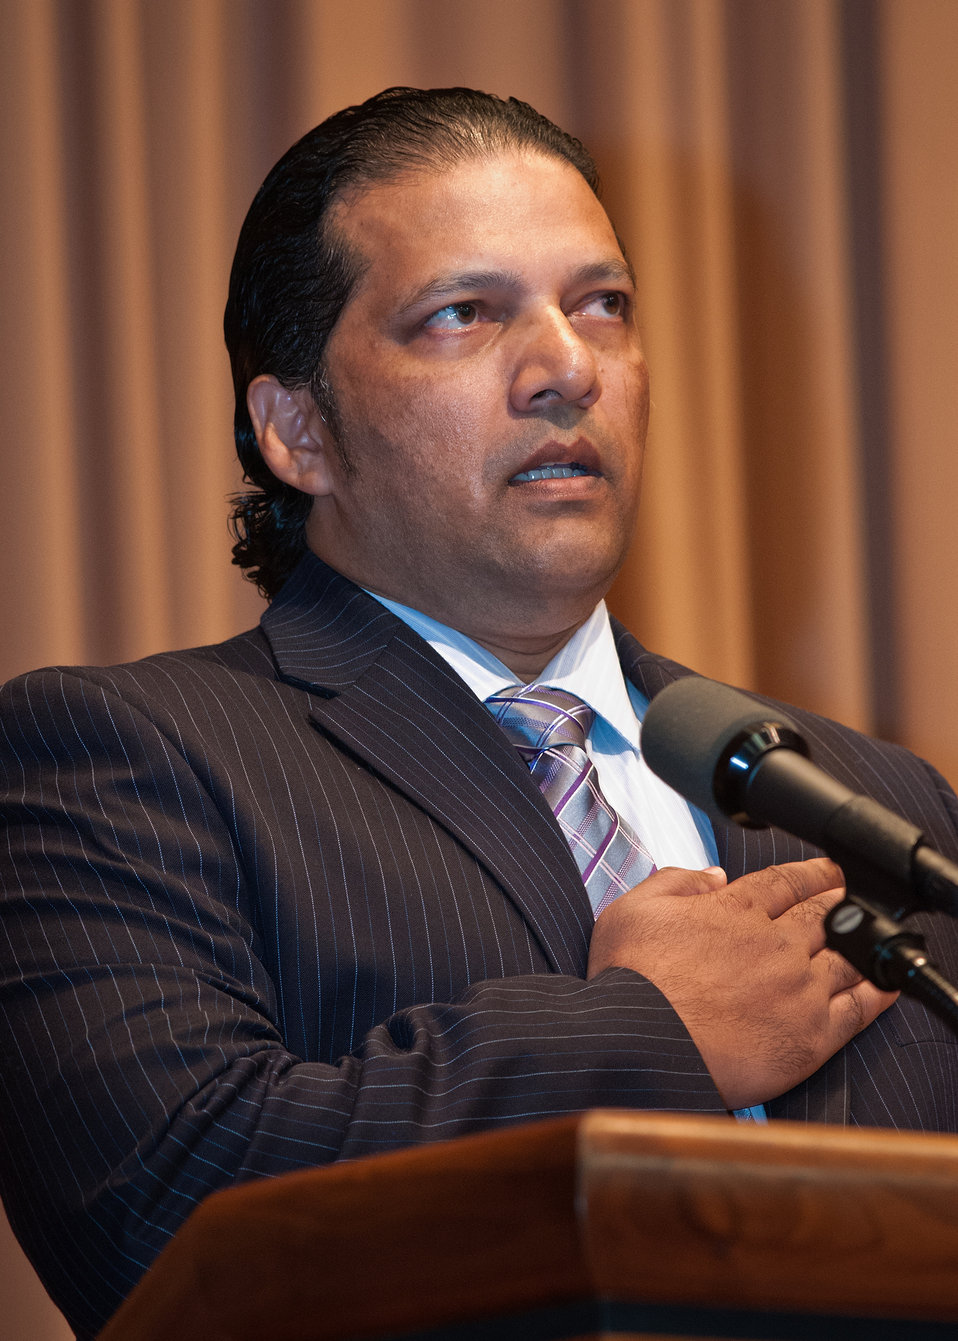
Agriculture Office of Human Resources Management (OHRM) Director of Diversity, Recruitment and Work/Life Division Monshi Ramdass leads the Pledge of Allegiance at the U.S. Department of Agriculture (USDA) 2012 Hispanic Heritage Month in Washington, D.C. on Thursday Sept. 20, 2012.